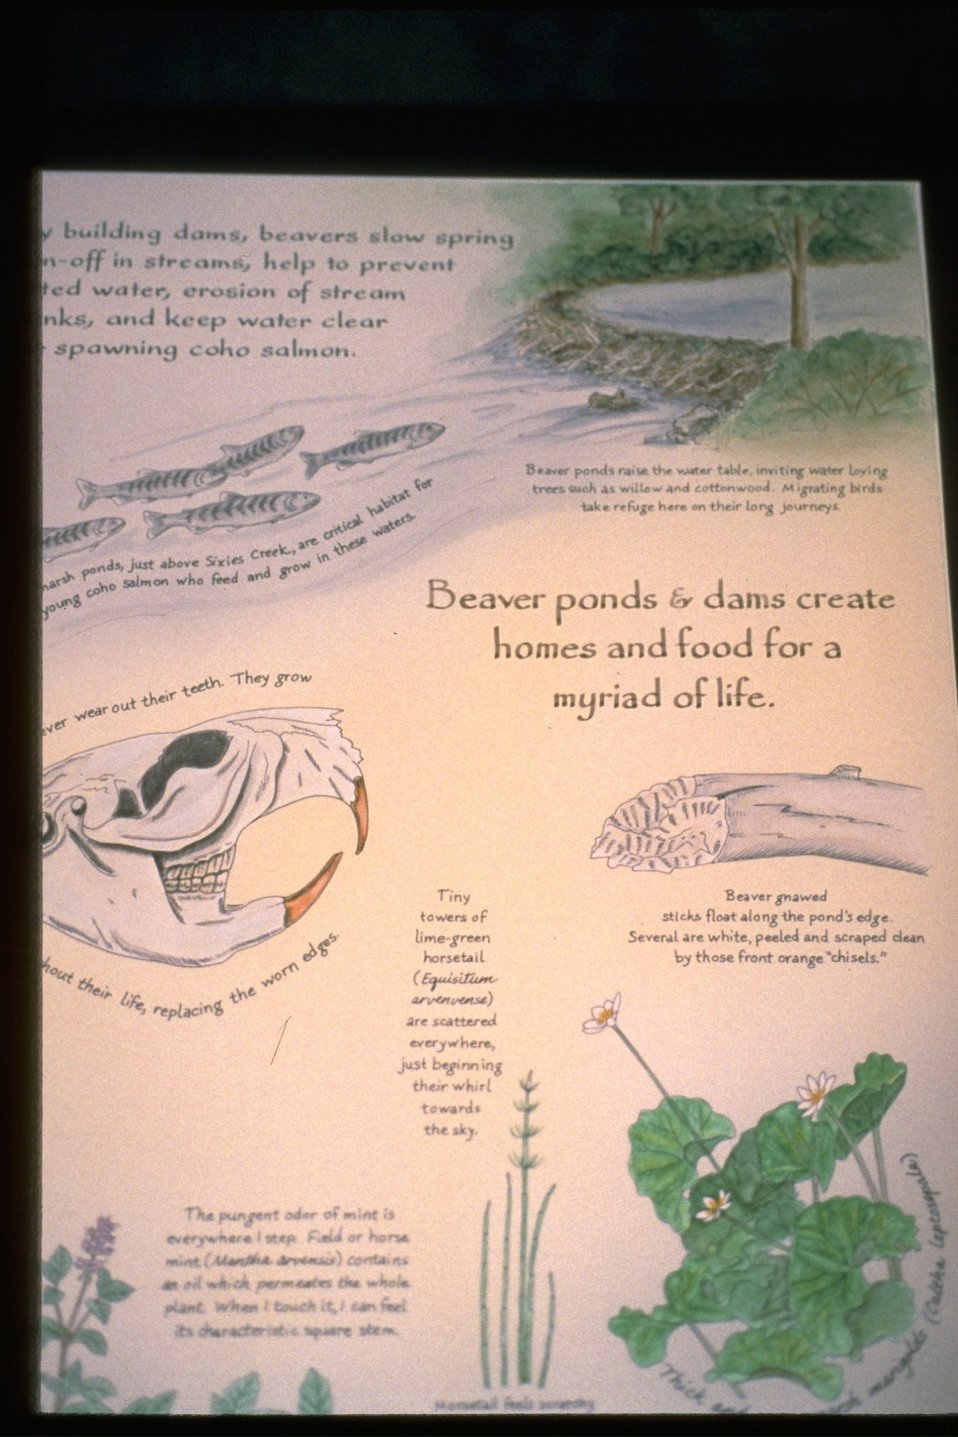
Interpretive Panels: Boardwalk Trail Journals.